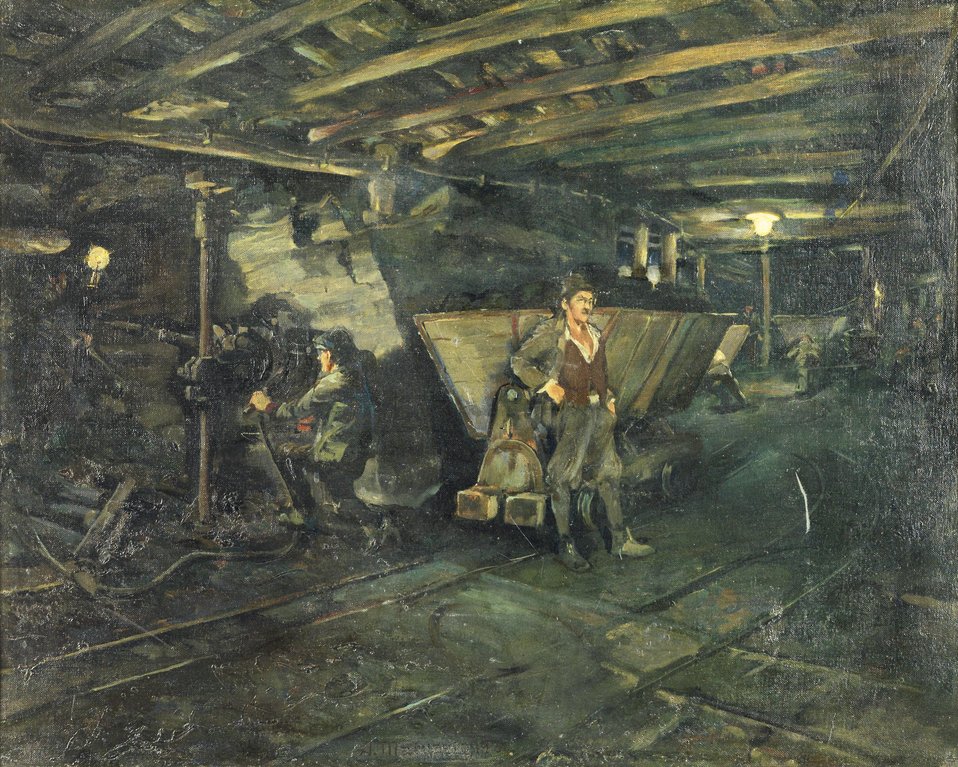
Deutsch: Bergbauszene, signiert, datiert A. Marussig 1920, Öl auf Leinwand, 60 x 75 cm